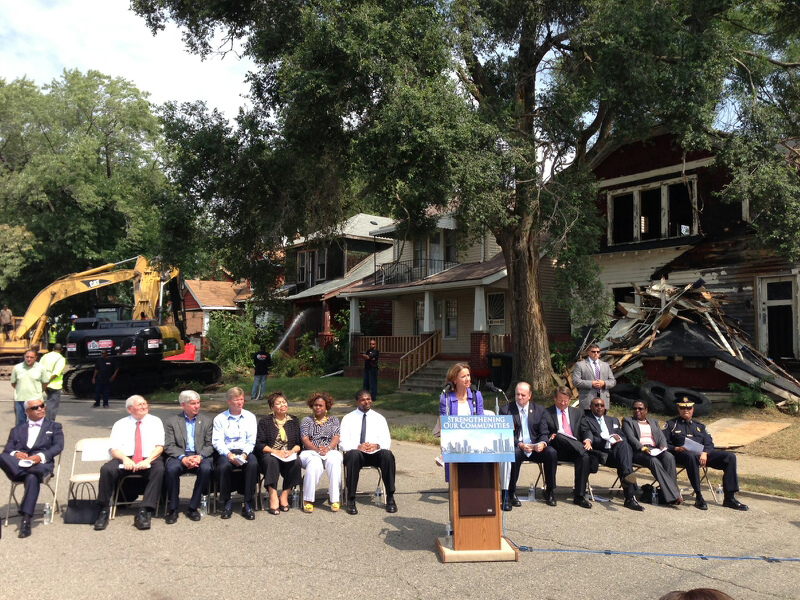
Blight Elimination Program kick-off event in Detroit

Under Secretary for Domestic Finance Mary Miller speaks at event hosted by the Michigan State Housing Development Authority to kick off the kick-off of the in Detroit, Michigan/.